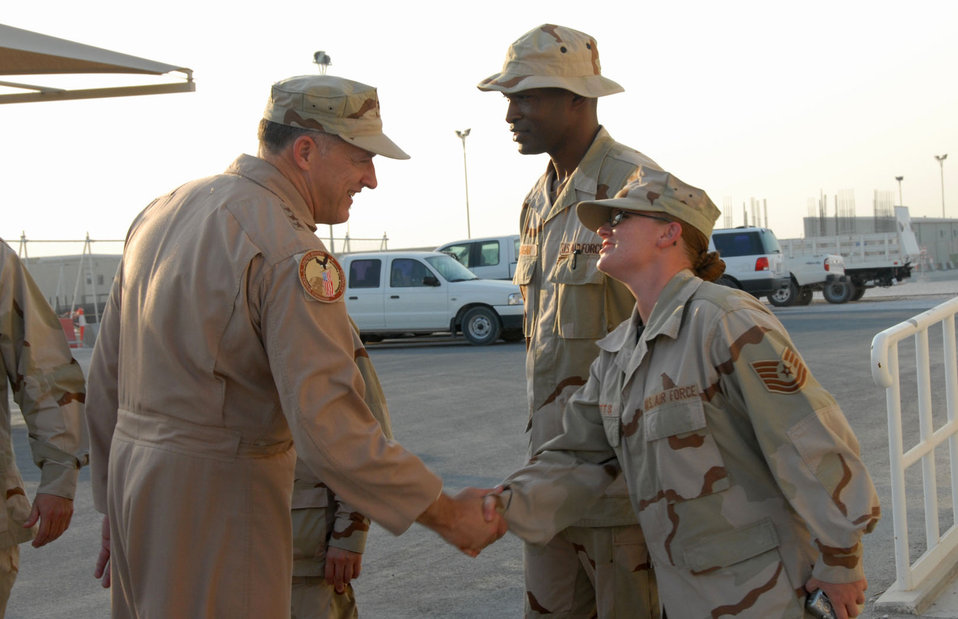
CENTAF commander visits 379th Air Expeditionary Wing

Lt. Gen. Gary North greets Tech. Sgt. Jennifer Butts during his tour Aug. 15 of the base's medical facilities at the 379th Air Expeditionary Wing in Southwest Asia. The general is the commander of U.S. Central Command Air Forces and 9th Air Force. During his visit, General North met with servicemembers recovering from wounds they received while serving in Operations Iraqi Freedom and Enduring Freedom. Sergeant Butts is assigned to the 379th Expeditionary Medical Group.